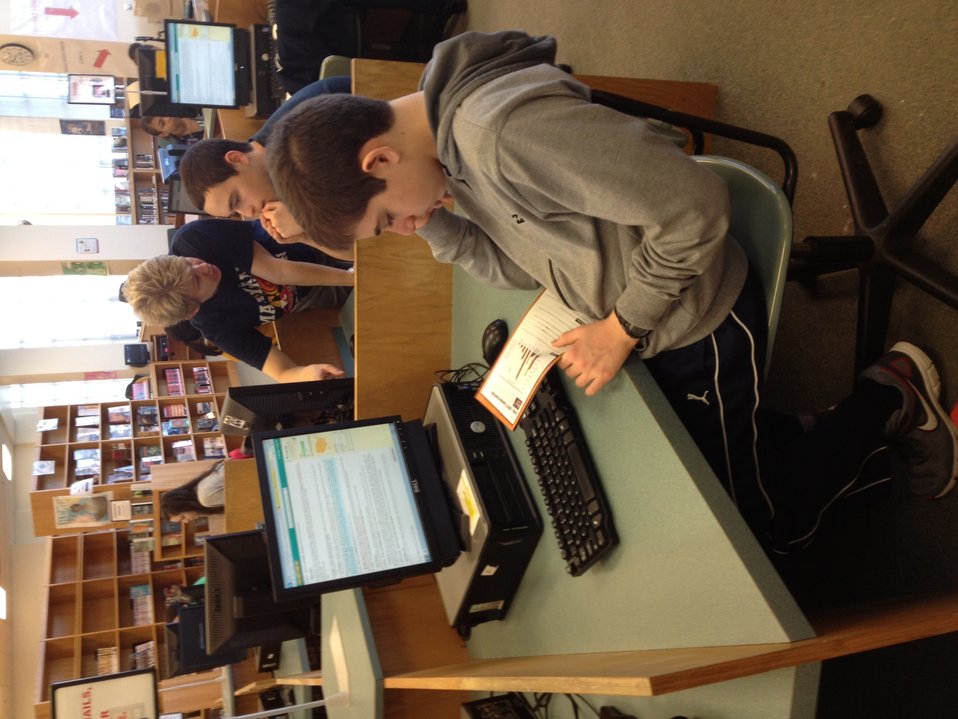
Chat Day NDFW 2013

Rockville, MD. Students from Walter Johnson H.S. participate in NIDA's National Drug Facts Week Chat Day Event, 2013.